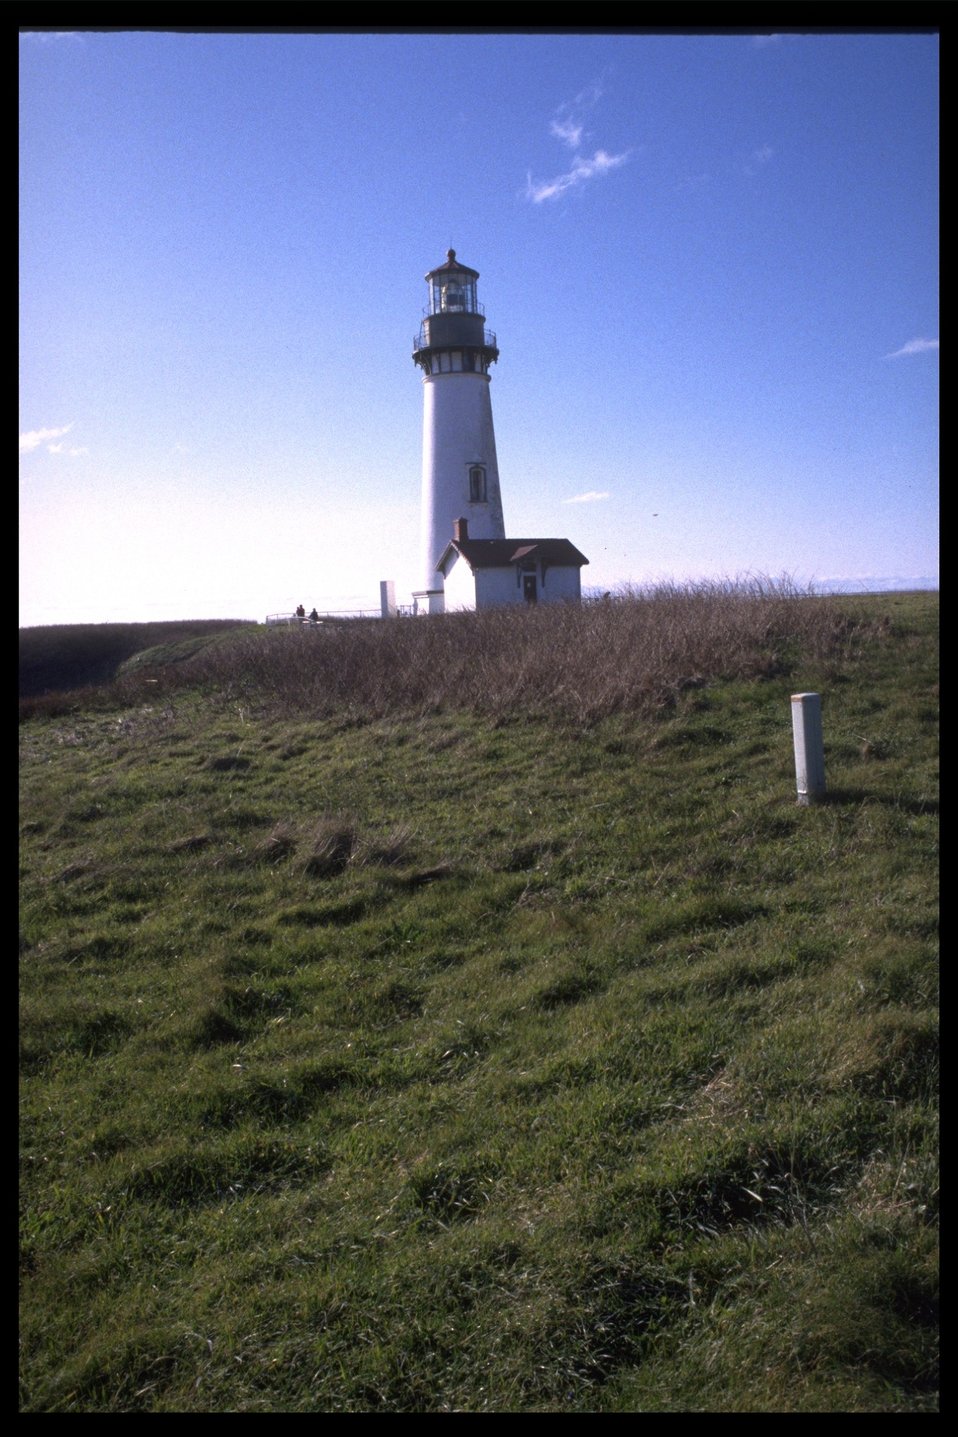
Yaquina Head Lighthouse.